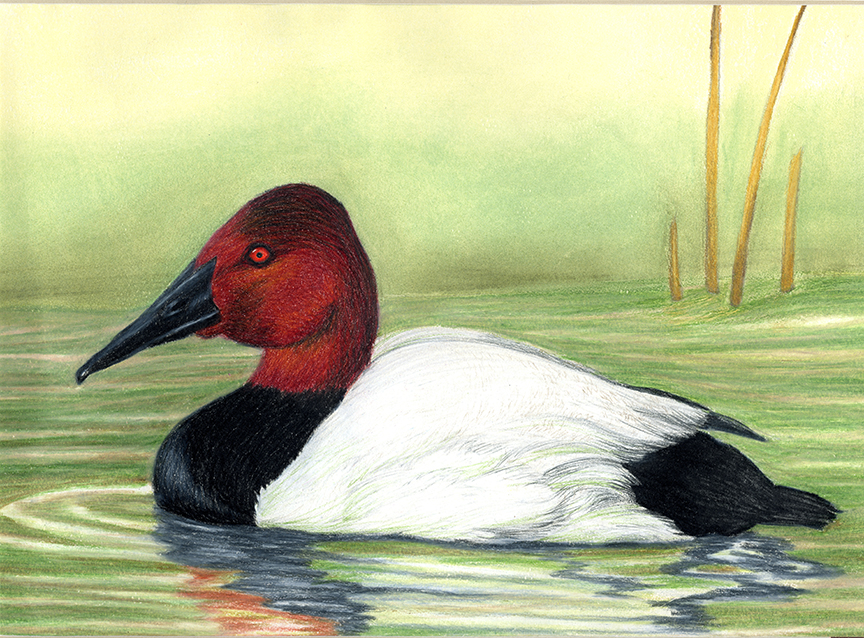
JRDuck2013KY

2013 Junior Duck Stamp Best of Show-Kentucky